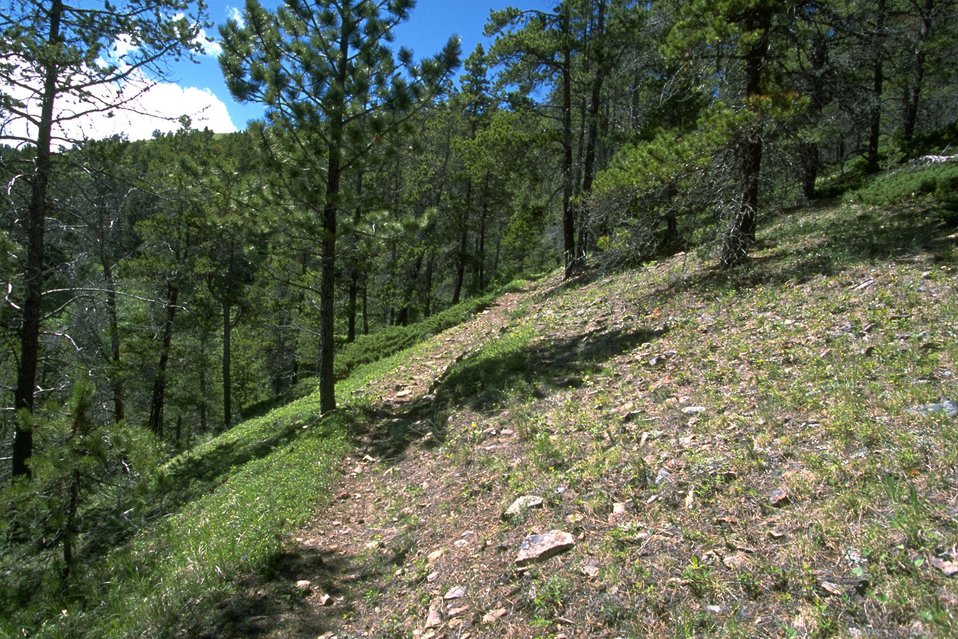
Hiking trail on a grassy slope in the Judith Mountains